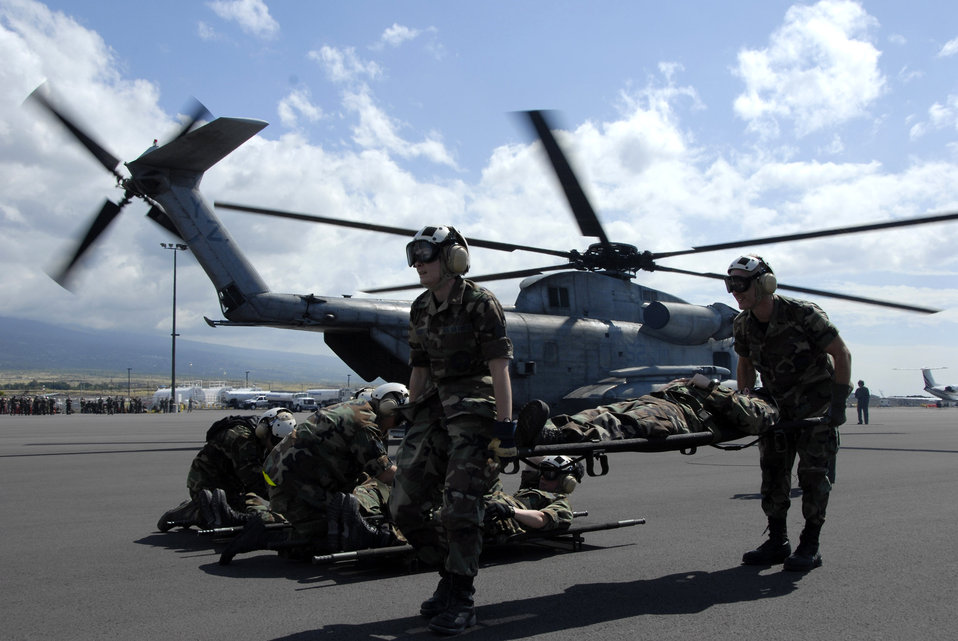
Lift and Move!

Personnel from the expedtionary medical members at exercise Pacific Lifeline lift and prepare to transport a paitent on to a CH-53D Sea Stallion helicopter. The EMEDS were going thtough refresher training courses taught by cadre from a 14-person Expeditionary Medical Support Training Team currently deployed to Kona, Hawaii, from Brooks City-Base, Texas, to train, evaluate and add realism to exercise scenarios.Pacific Lifeline is a Pacific Air Forces total force humanitarian assistance and disaster relief exercise being held at the Kona International Airport, Hawaii, now through Feb. 9.